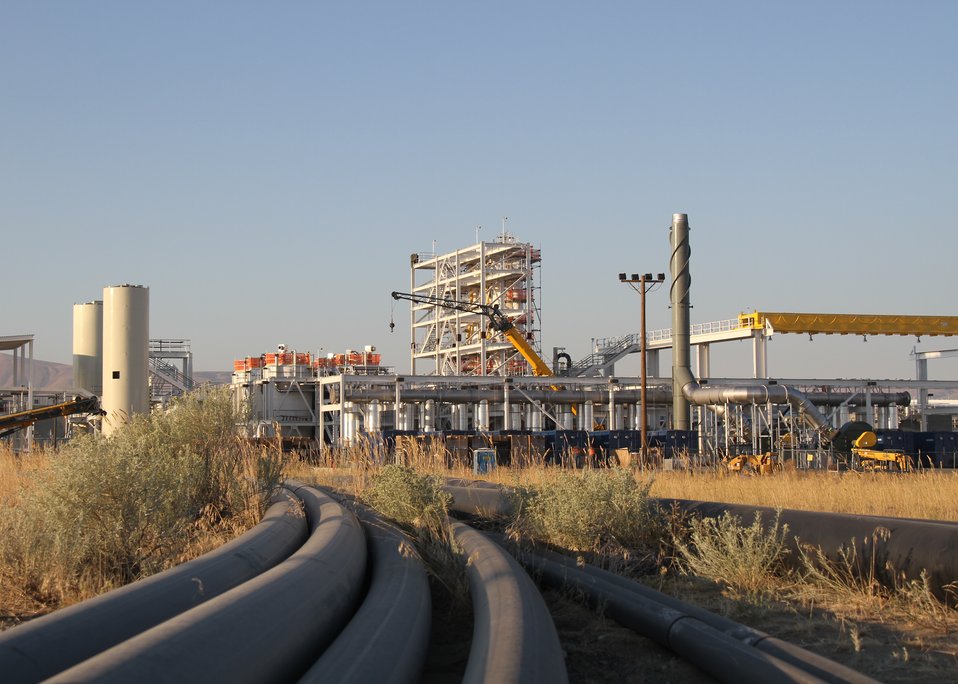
Richland 200 West system

The 200 West system will be Hanford’s largest groundwater treatment facility. The facility is scheduled to begin operating in 2012.